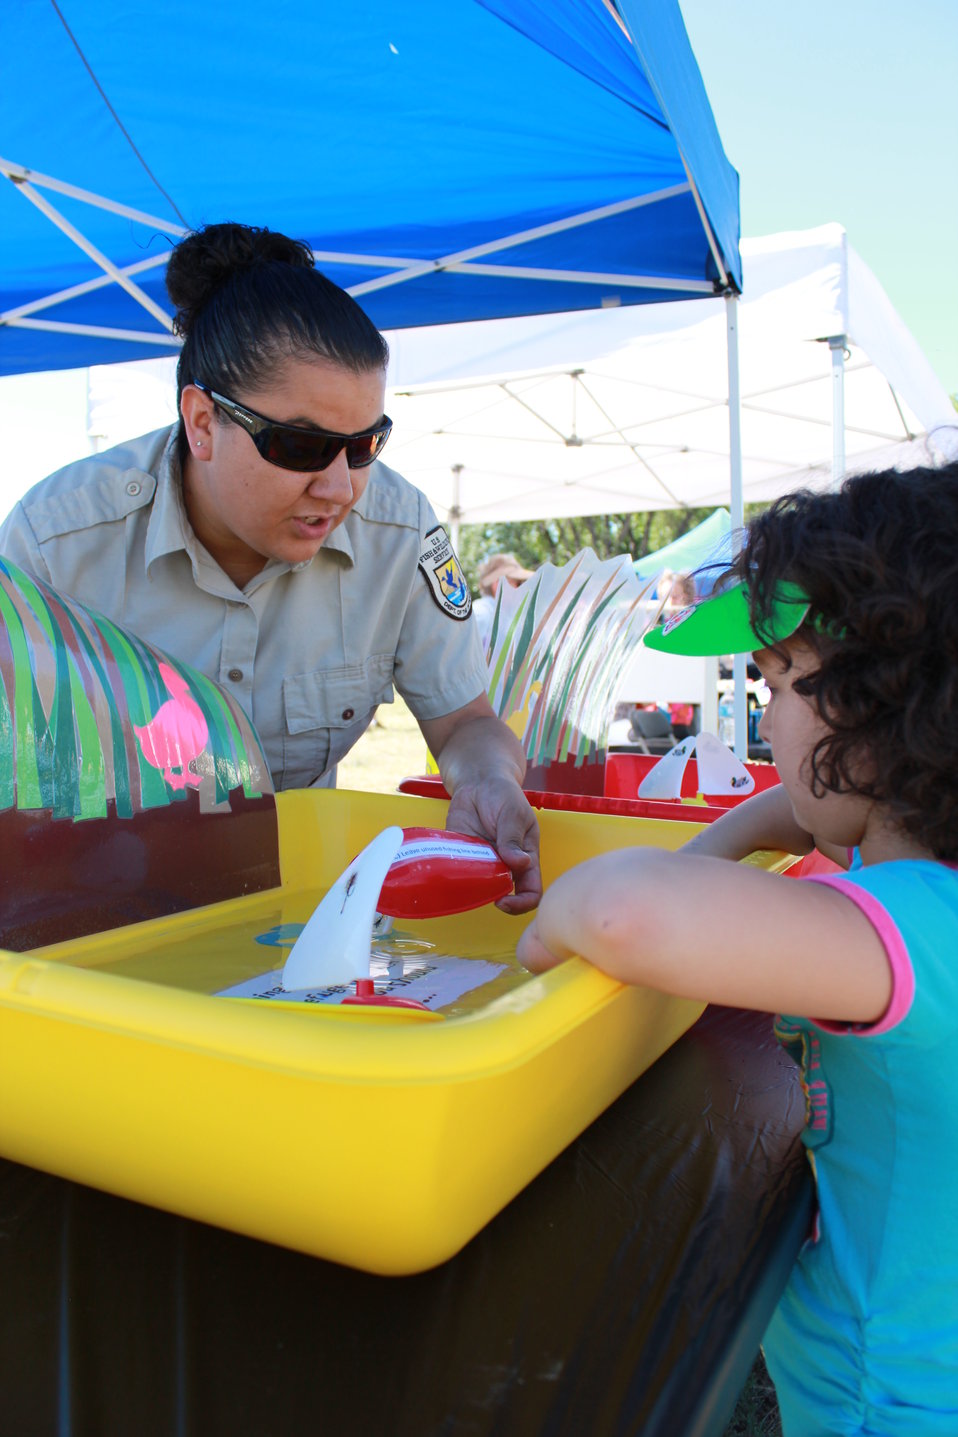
Connecting Children to Nature

Rocky Mountain Arsenal NWR's Park Ranger, Lisa Chambers, shows the importance of fishing rules and regulations at an educational station during the 2012 Fishing Frenzy.

Location: Lake Mary, Rocky Mountain Arsenal NWR

Credit: Jaclyn Kircher / USFWS

Photo Contest Entry #28